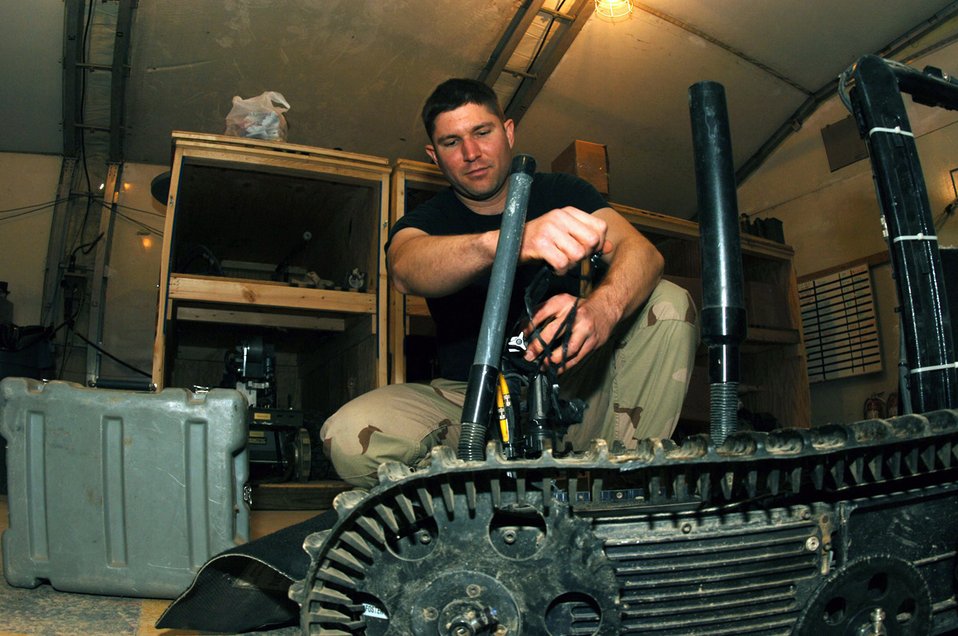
EOD robot

BALAD AIR BASE, Iraq (AFPN) -- Staff Sgt. Glenn Wright repairs an EOD robot used to scope the area before going out to a site. Sergeant Wright is with the 332nd Expeditionary Civil Engineer Squadron.